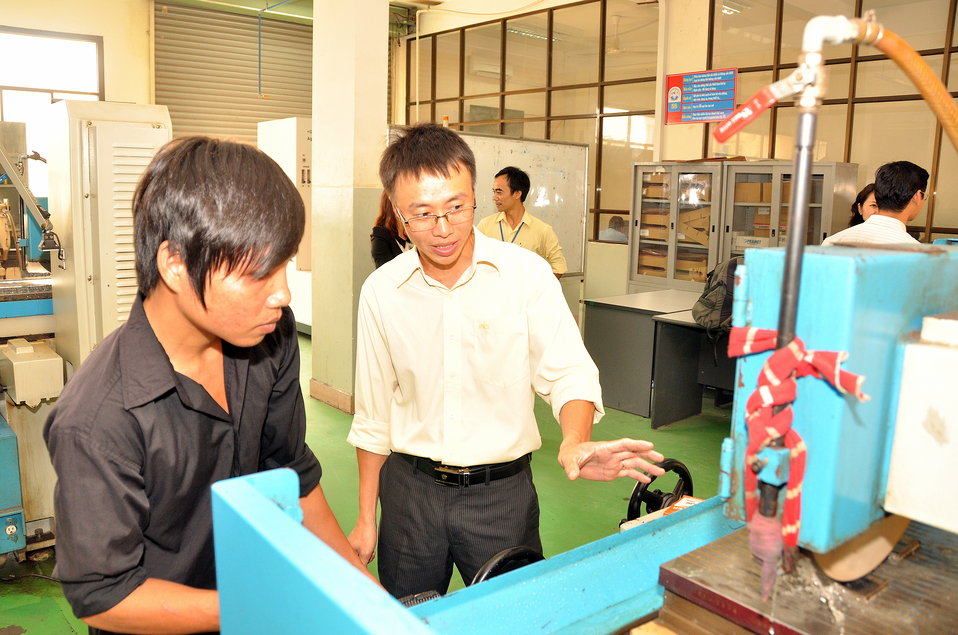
Ho Chi Minh Vocational College of Technology

Vu The Manh, lecturer of Mechanical Engineering Faculty at the Ho Chi Minh Vocational College of Technology

Photo: January 11, 2013, Richard Nyberg @USAIDVietnam